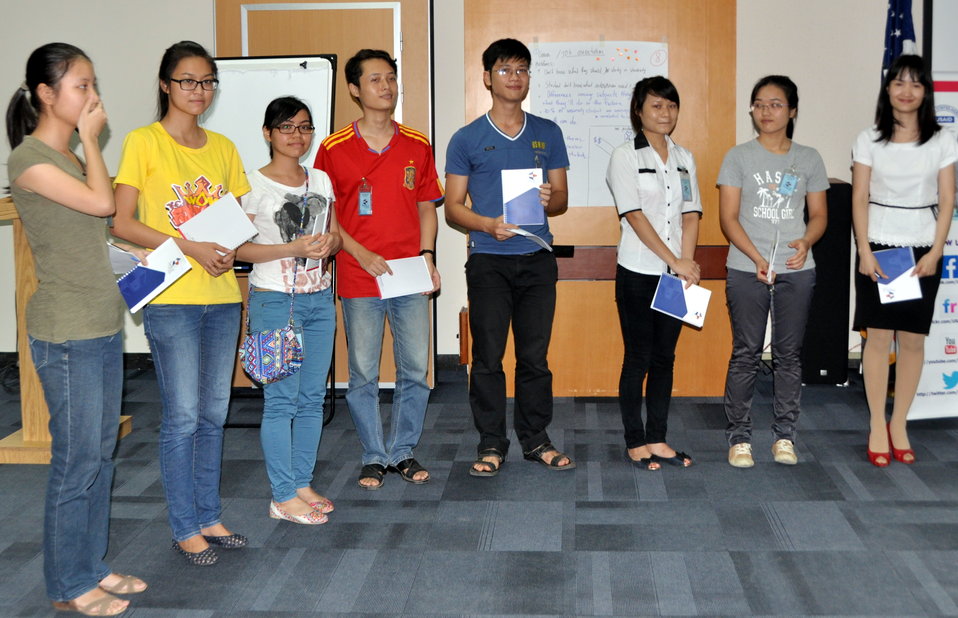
International Youth Day 2013: USAID hosts a lively discussion and group exercise on how youth can join in to advance development

Hanoi, August 12, 2013.